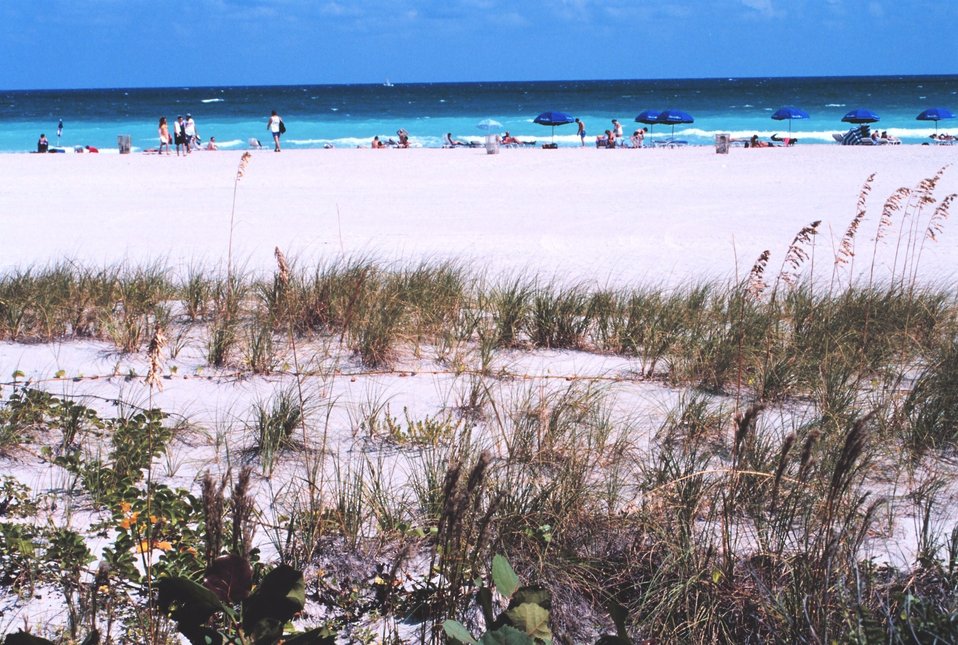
A view of the beach along the Atlantic Ocean